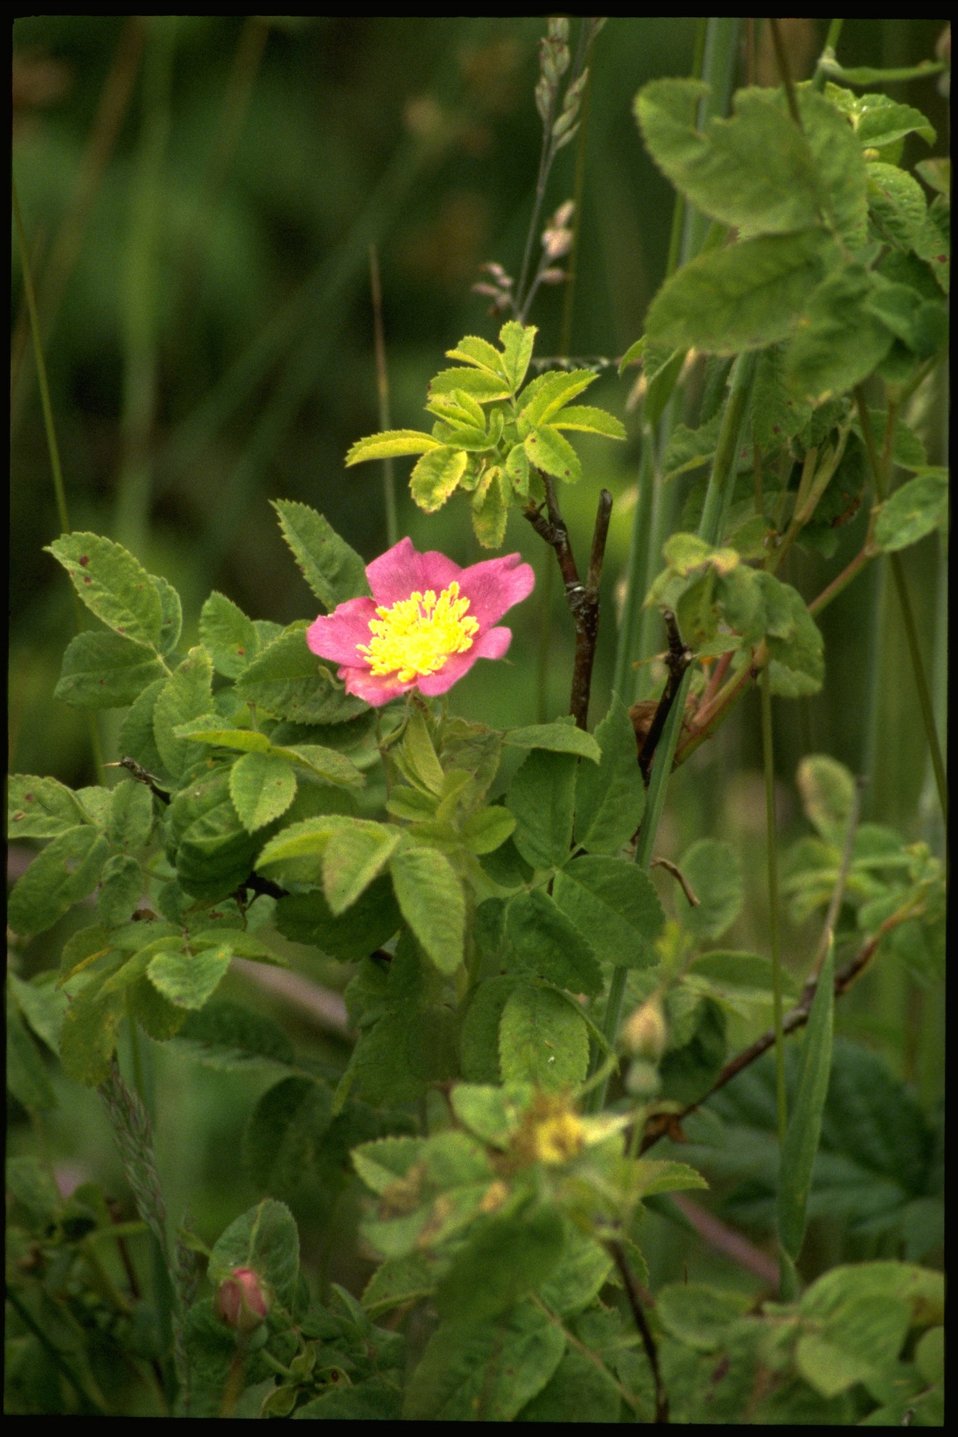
Medium shot of wildflower, genus Rosa.